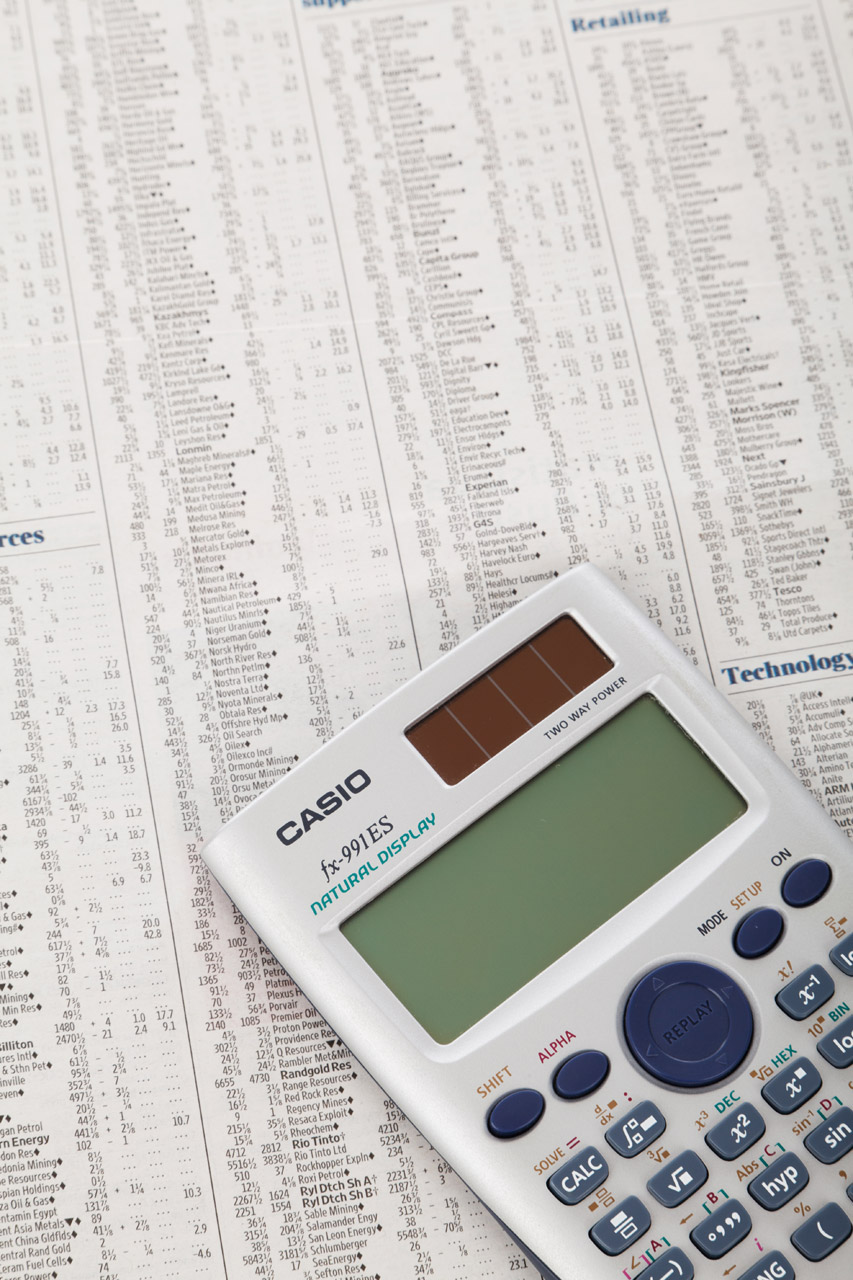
Calculator and markets

Calculator and market data in newspaper.